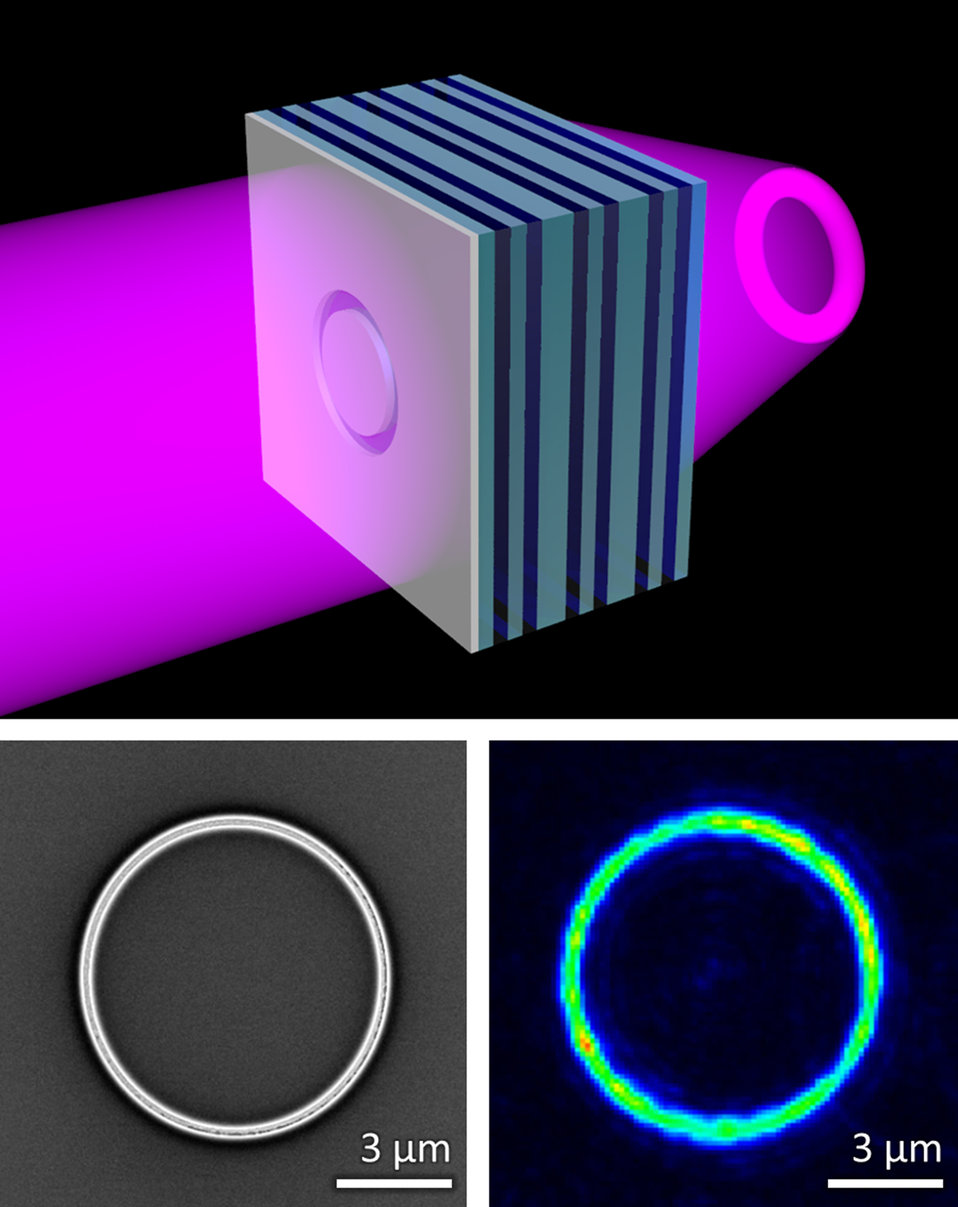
Metamaterial 'Flat Lens'

A NIST team created an ultraviolet (UV) metamaterial formed of alternating nanolayers of silver (green) and titanium dioxide (blue). When illuminated with UV light (purple) a sample object of any shape placed on the flat slab of metamaterial is projected as a three-dimensional image in free space on the other side of the slab. Here a ring-shaped opening in an opaque sheet on the left of the slab is replicated in light on the right.